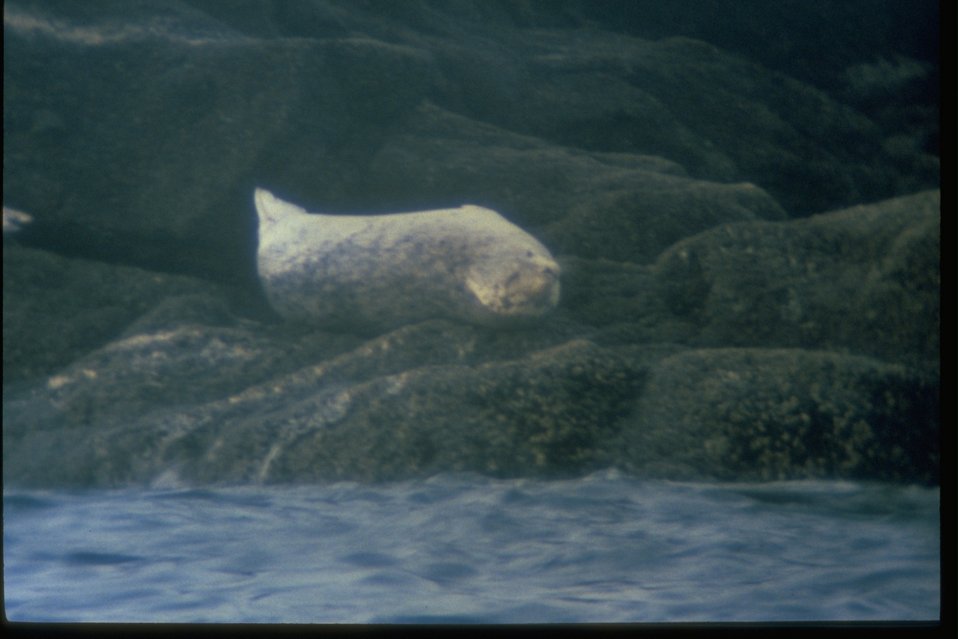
Pacific Harbor Seal on Seal Island.